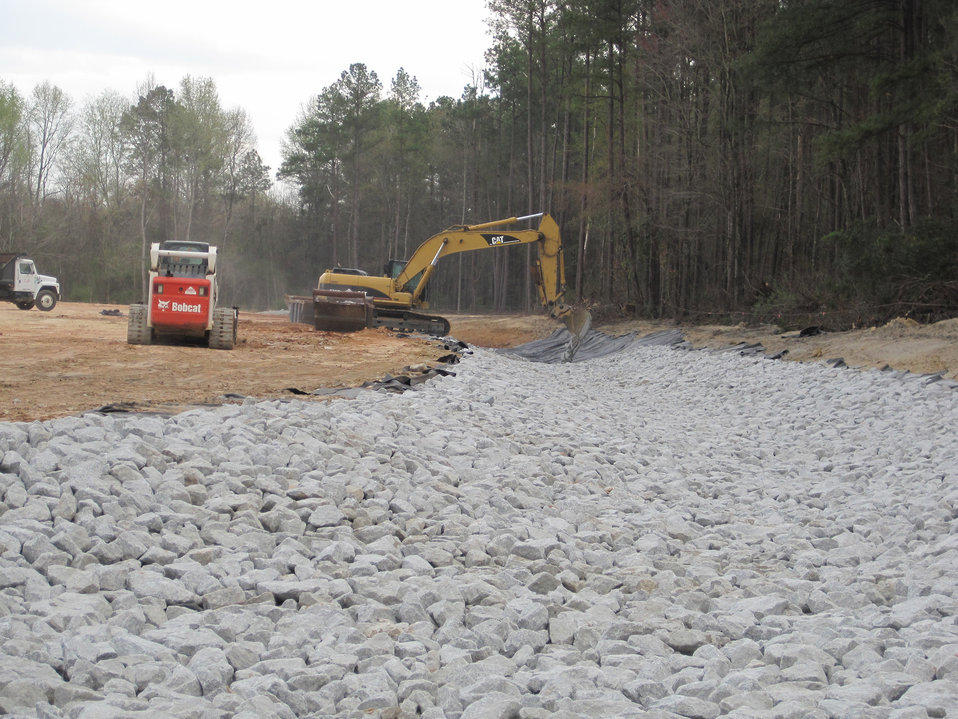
P Ash Basin - During

At the P Area Ash Basin, Recovery Act workers removed about 35 acres of vegetation on and around the 14-acre manmade earthen basin to prepare for remediation. Next, they consolidated ash inside the basin that had spread in the area from former P Area Powerhouse operations, which ended in 1991. Workers then prepared a clean soil and sod cover, and planted seedlings.
The vegetative layer prevents precipitation from infiltrating the basin’s ash residues and entering the groundwater. About 1,500 feet of erosion-control fencing also was installed.